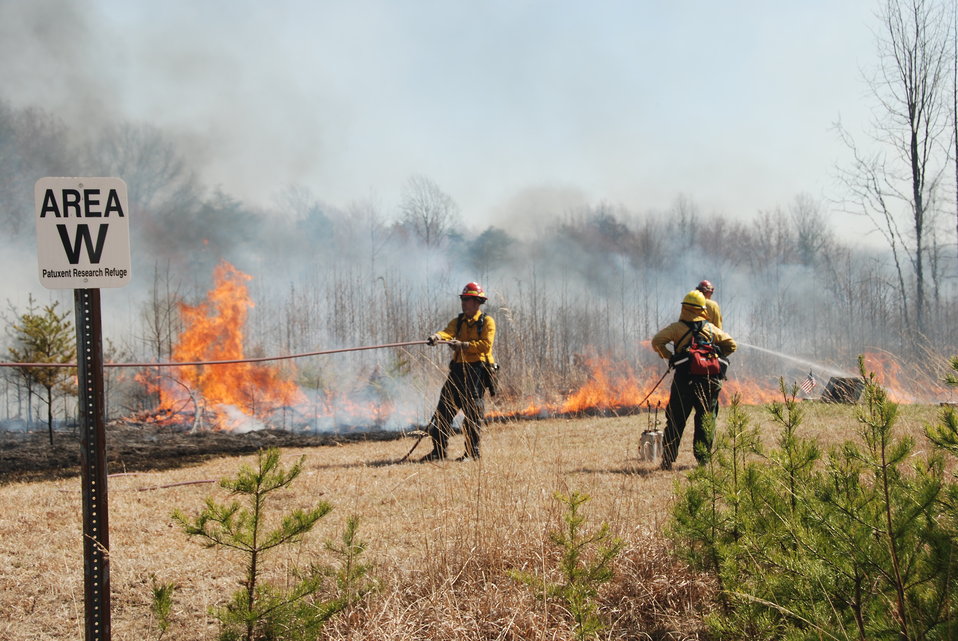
Pulling Hose

Laurel, Maryland, April 14, 2012: Firefighter Steve Stack from Blackwater National Wildlife Refuge pulls a hose to help maintain a fire line around a controlled burn. The burn, at Patuxent Research Refuge, was to maintain native grasslands, remove woody vegetation, and control invasive species such as Korean Lespedeza.